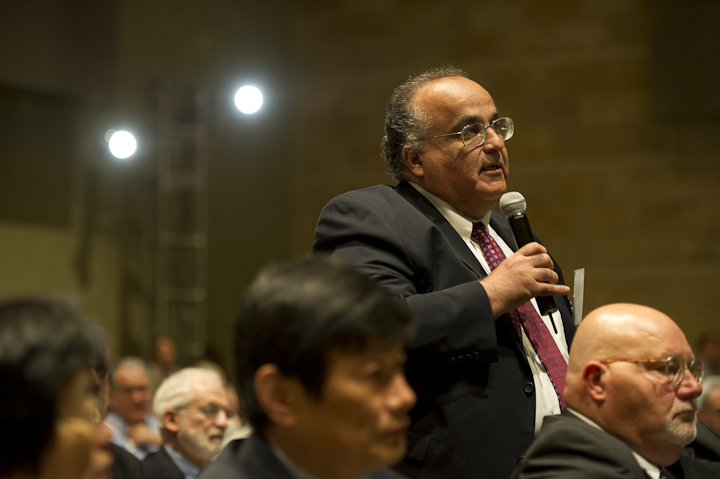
SunShot QandA

June 13, 2012- Amir Faghri asks a question to Steven Chu, Secretary of Energy, U.S. Department of Energy the secretary after gave the keynote address at the SunShot Grand Challenge Summit and Technology Forum in Denver, Colorado.